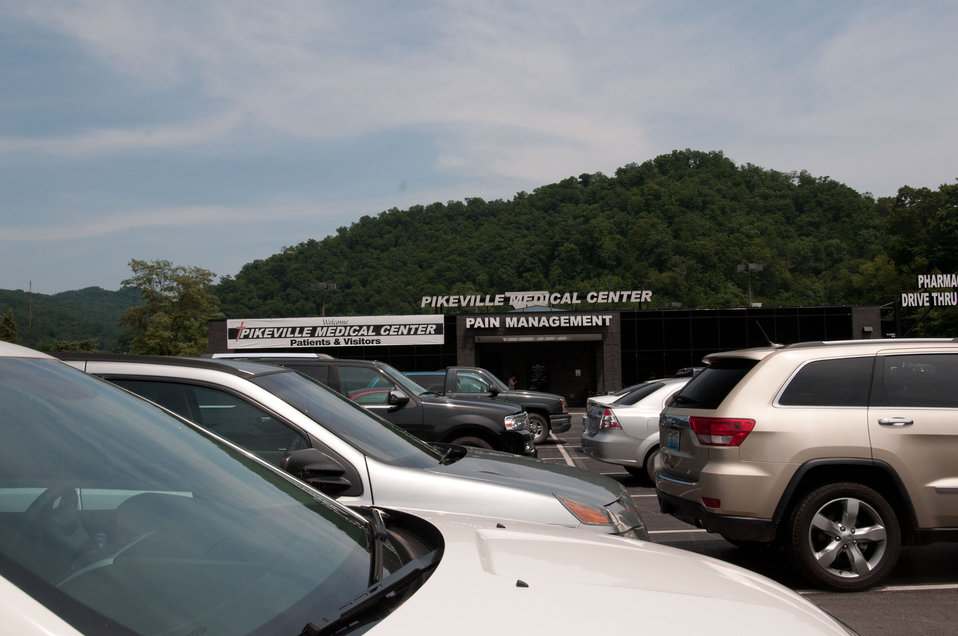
Re-utilized buildings at various ends of multiple parking lots are common sights at the Pikeville Medical Center on Tuesday, July 12, 2011, in Pikeville, KY. Nearby, the above ground construction phase of Pikeville Medical Center (PMC) expansion project, on Tuesday, July 12, 2011, in Pikeville, KY. After months of infrastructure construction and rain delays, one of Kentucky’s largest American Recovery and Reinvestment Act (ARRA) projects is under way. The $44.6 million Community Facilities Loan will finance construction of a new medical office building and parking garage. The new medical office building will house outpatient surgery, endoscopy, surgical support and provide exam, waiting and office space for 23 primary and specialty care physicians. It also will contain a medical research center to support existing research – in conjunction with Pikeville College – on health disparities, genetic research related to the prevalence of cancer and other areas, including drug and treatment trials. The new parking garage with more than 1,000 spaces will be built adjacent to the new medical building, eliminating the need to shuttle patients back and forth from remote parking areas. The new garage will provide closer and easier proximity to medical and hospital services for all patients.
Wayne Rutherford, County Judge-Executive for Pike County, says funding from ARRA is a boon for his county because it will create jobs.

“This is great for Pike County’s economy. We know we have a great hospital, and with this support, it will be even better,” said Rutherford. “The unemployment rate here is above the state average and this will stimulate jobs. There will be construction, which means lots of jobs on the front end – and even more once it is built.”

Pike County is one of Kentucky’s persistent poverty counties and the current medical facility provides health care services for a rural population of more than 68,000. This project will create 1,430 direct and indirect construction jobs, in addition to 97 long-term jobs. It is scheduled to be completed in December 2012.

“This project is a prime example of the ARRA monies being utilized for much-needed health care facility expansion in an economically-depressed region of Eastern Kentucky and Appalachia,” said Tom Fern, State Director for Rural Development in Kentucky. “This hospital has received national recognition for its quality of care, and this money will allow them to expand and build upon their success and continue providing quality health care services to the region.”

PMC was named National Hospital of the Year by the American Alliance of Healthcare Providers in November 2009. The hospital was among 400 elite health care facilities to apply for this prestigious honor. To earn this recognition, PMC competed against more than 400 hospitals, including the Mayo Clinic, the John Hopkins Hospital, Cedar-Sinai Medical Center, the Cleveland Clinic, Duke University Medical Center and Vanderbilt University.

Pikeville City Manager Donovan Blackburn said the medical center is the largest employer in Pikeville and contributes nearly $2 million to the city through the payment of occupational taxes. He went on to say that Pikeville Medical’s success is also the city’s success because as other cities struggle with dwindling revenues, Pikeville has actually seen growth.

“This is a regional medical center that is very important to the city. Pikeville is a legal, financial and education hub for Eastern Kentucky and a gateway to rural communities in Virginia and West Virginia. There are half a million within a 50-mile radius – so it’s not just local people that depend on this facility,” said Blackburn. “From a regional standpoint it adds volume from a jobs standpoint. Everybody in this county knows someone or has family that works for Pikeville Medical Center.
“People in this area used to have to go out of the area for good jobs and quality medical services, but Pikeville Medical has changed that,” added Blackburn. 'And it has impact on other parts of the city’s economy – hotels, restaurants and retail. It increases the quality of life tenfold.”

The Recovery Act was designed to spend money gradually over time in order to sustain a true recovery – with peak spending to occur early this year. While the experts agree that ARRA is already responsible for creating or saving approximately two million jobs, about 75 percent of recipients that reported on their Recover Act spending indicated their projects are less than half complete, meaning there is even more job impact from those dollars to come.